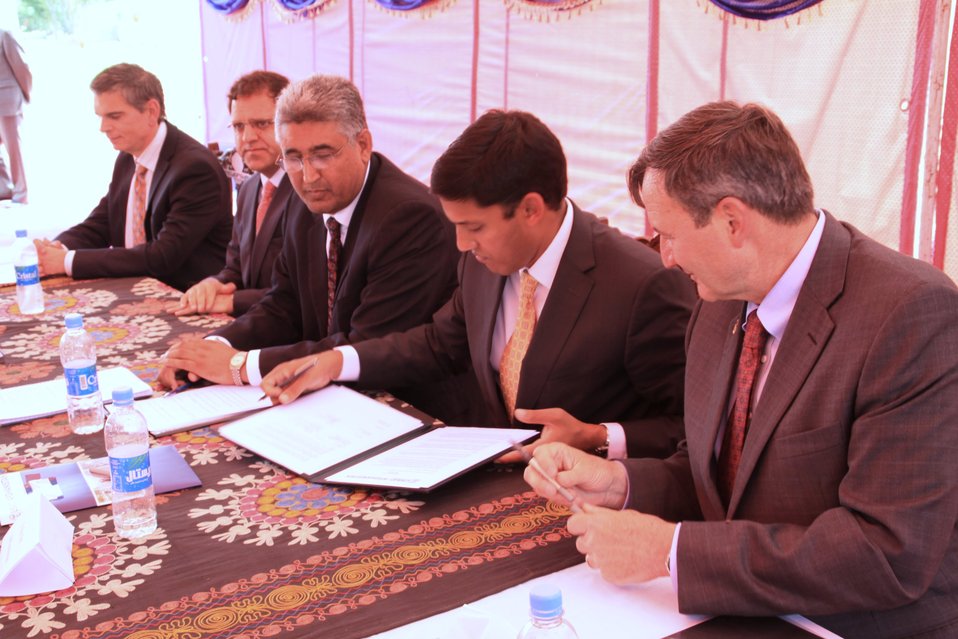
دهاقین افغان دسترسی بیشتر به قرضه را از طریق 100 میلیون دالرمساعدت مالی برای انکشاف زراعتی بدست آوردند